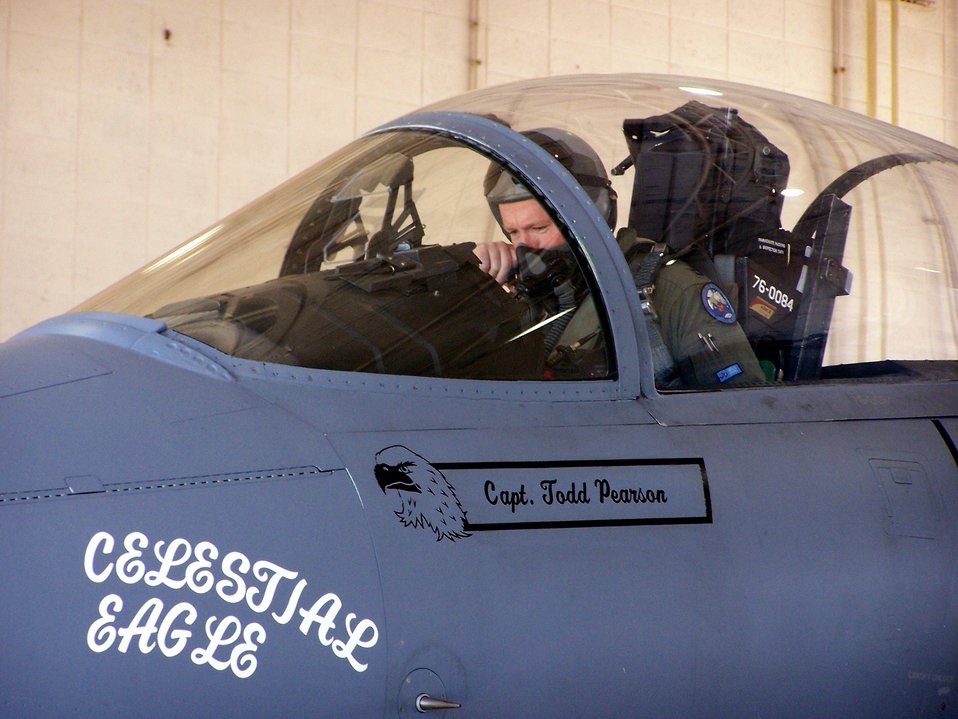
Celestial Eagle: Historic anti-satellite mission remembered

Capt. Todd Pearson performs pre-flight checks on an F-15 Eagle Sept. 13 at Homestead Air Reserve Base, Fla., during the Celestial Eagle Remembrance Flight. Captain Pearson is with the 390th Fighter Squadron at Mountain Home Air Force Base, Idaho. Captain Pearson's father, retired Maj. Gen. Doug Pearson, flew the exact same F-15, now assigned to the 125th Fighter Wing at Homestead, exactly 22 years prior while accomplishing the only successful satellite kill by an aircraft launched missile in history.